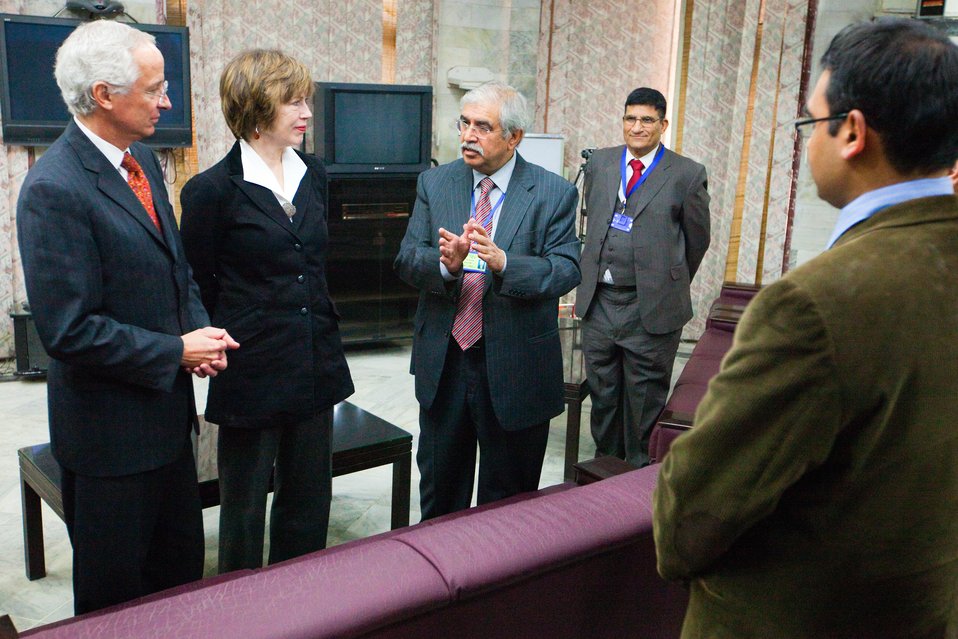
Telemedicine

Rawalpindi, January 5, 2012 – Ambassador Cameron Munter and his wife Dr. Marilyn Wyatt sitting with Dr. Asif Zafar Malik, Project Director Telemedicine/training and other officials.